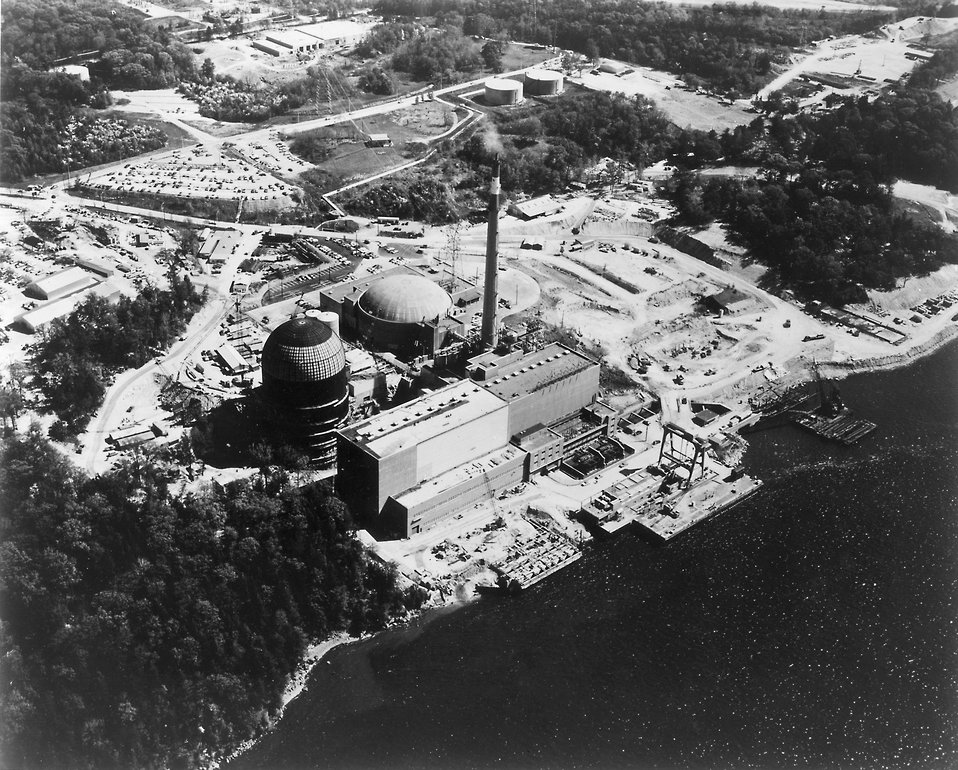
Con Edison Indian Point